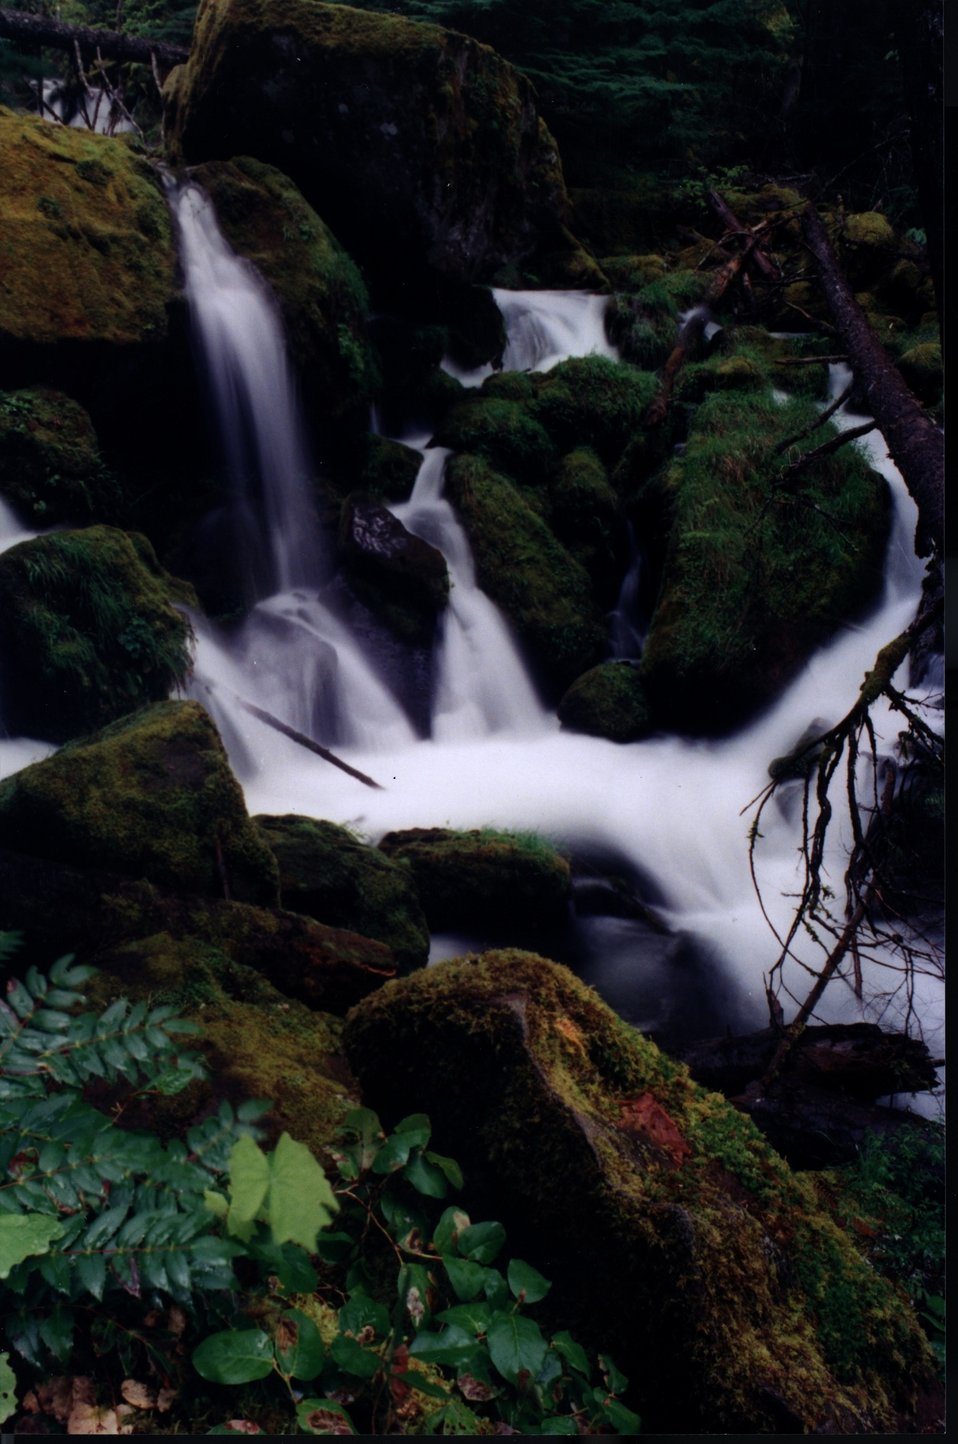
North Umpqua River area.